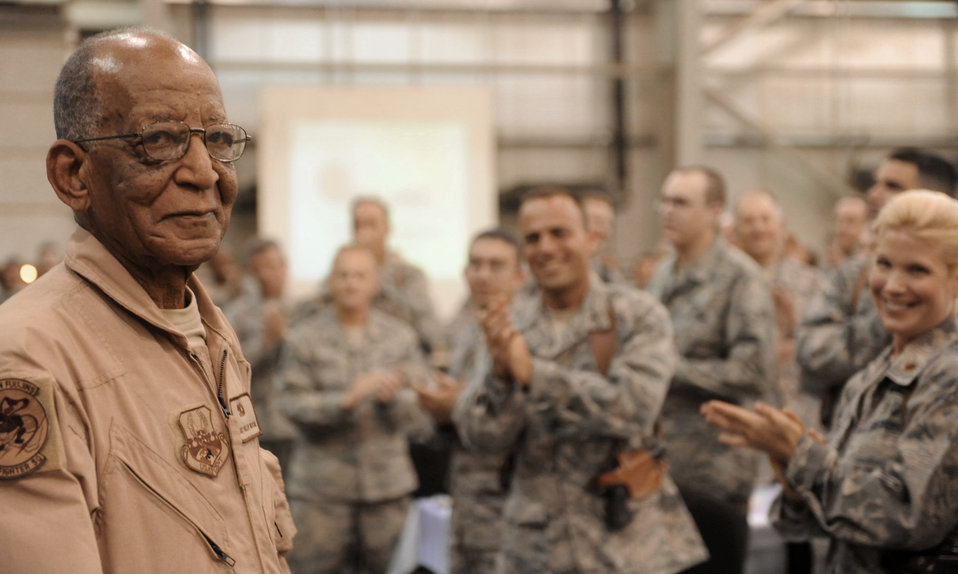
Tuskegee Airmen ... the legacy continues

Former Staff Sgt. Phillip Broome, a Tuskegee Airman, smiles as the audience sings